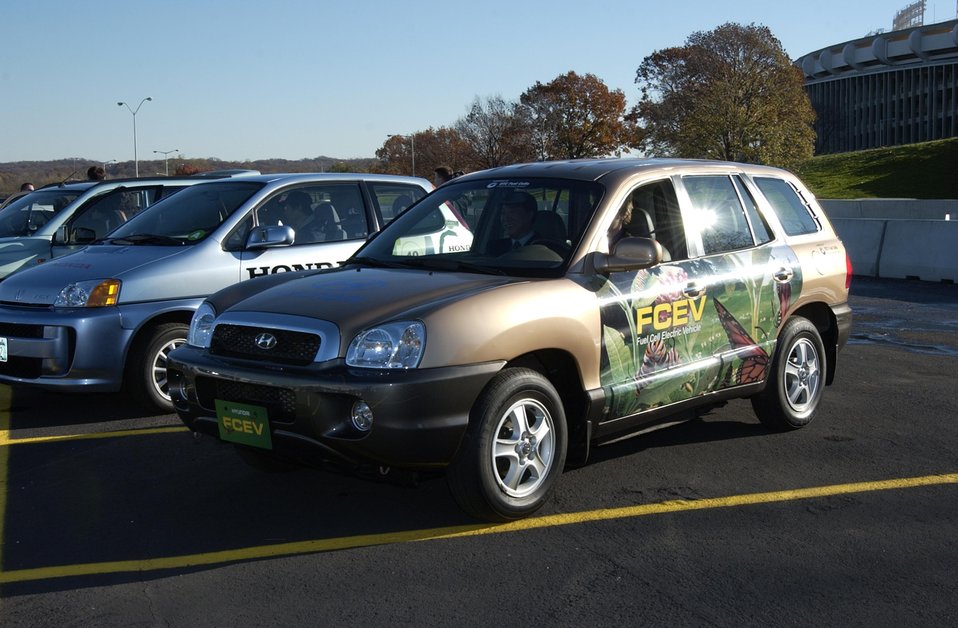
TOYOTA FCEV FUEL-CELL ELECTRIC VEHICLE.

TOYOTA HAS DEVELOPED A FUEL CELL THAT USES METHANOL TO PRODUCE ELECTRICITY THROUGH AN ELECTROCHEMICAL REACTION. VEHICLES POWERED BY METHANOL FUEL CELLS ARE CONSIDERED ELECTRIC VEHICLES BECAUSE THEY DO NOT HAVE ANY TYPE OF INTERNAL COMBUSTION ENGINE ON BOARD. ELECTRICITY GENERATED BY THE FUEL CELL IS USED TO POWER AN ELECTRIC MOTOR THAT DRIVES THE VEHICLE.